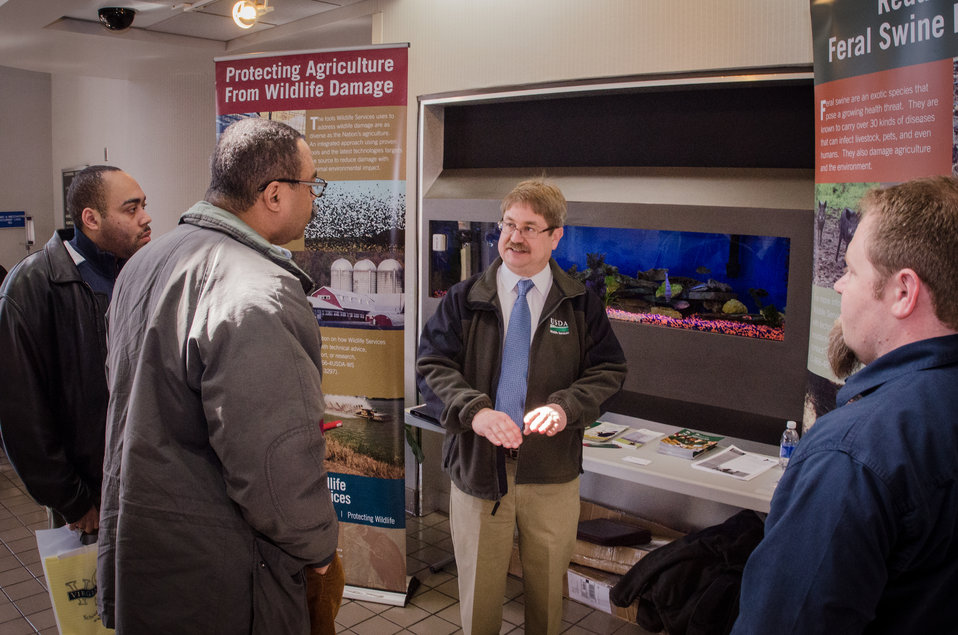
U.S. Department of Agriculture (USDA) Animal and Plant Health Inspection Service Wildlife Services State Director Scott C. Barras, Ph.D., center, and Staff Wildlife Biologist Jeffrey Rumbaugh, right, talked with farmers participating in the “Virginia State University (VSU), USDA and Virginia Farmers Working Together” outreach workshop in the VSU, L. Douglas Wilder building on Thursday, March 7, 2013, in Petersburg, VA. Farmers shared and learned new ways to do more with USDA services, and how to apply for programs that will help grow their business.